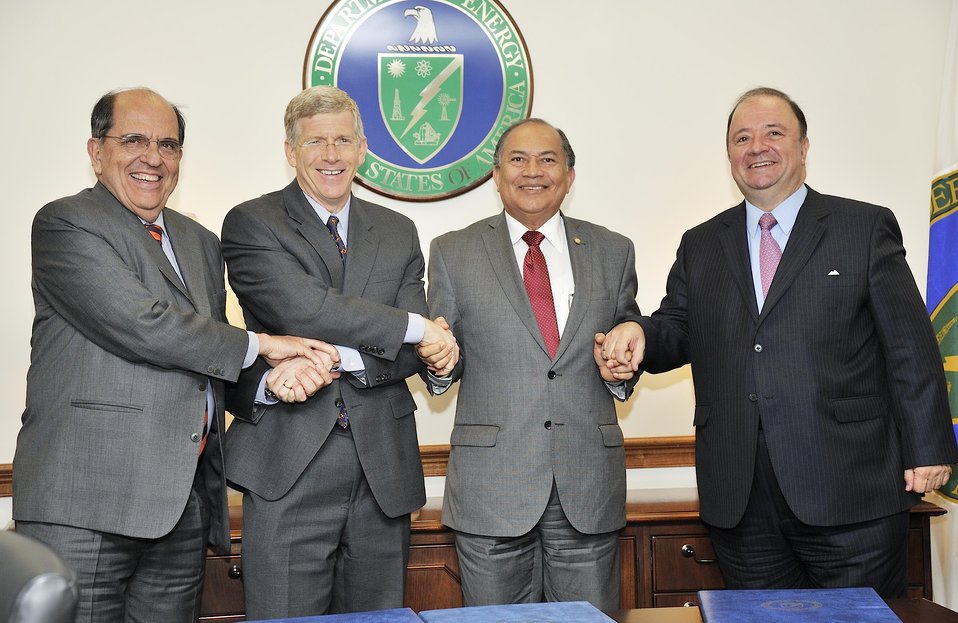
Mayor of Santiago de Calí Rodrigo Guerrero with U.S. Deputy Secretary of Energy Daniel Poneman, Colombia's Minister of Energy and Mines Amylkar Acosta, and Director of Planning of Colombia Tatyana Orozco signed a Memorandum of Understanding (MOU) to collaborate in the development of a Solar Decathlon Latin America and Caribbean competition.